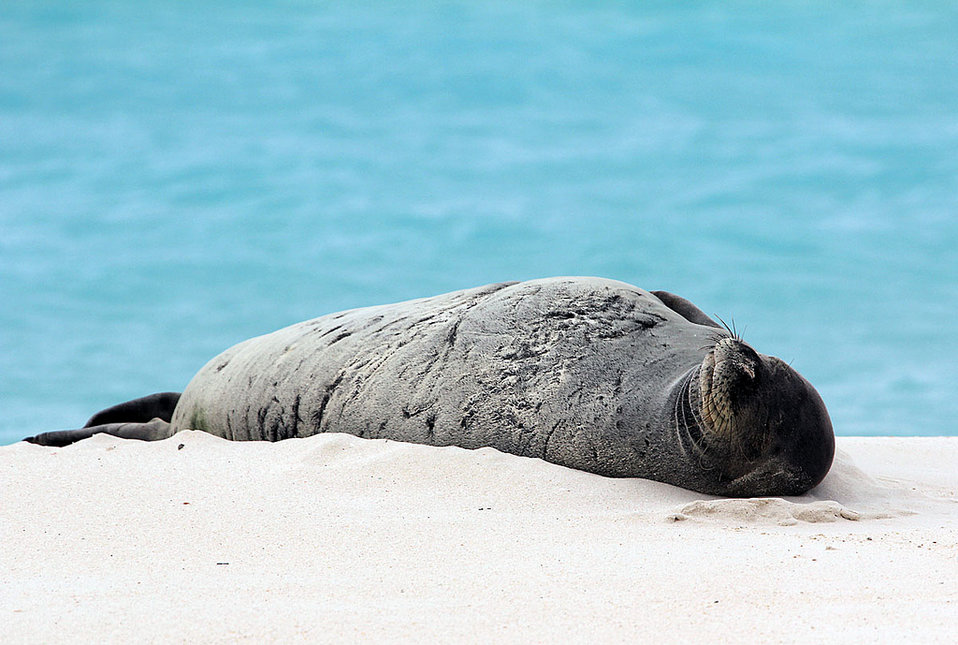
endangered Hawaiian monk seal sunning on the beach

Midway Atoll National Wildlife Refuge, Papahānaumokuākea Marine National Monument
January 2012